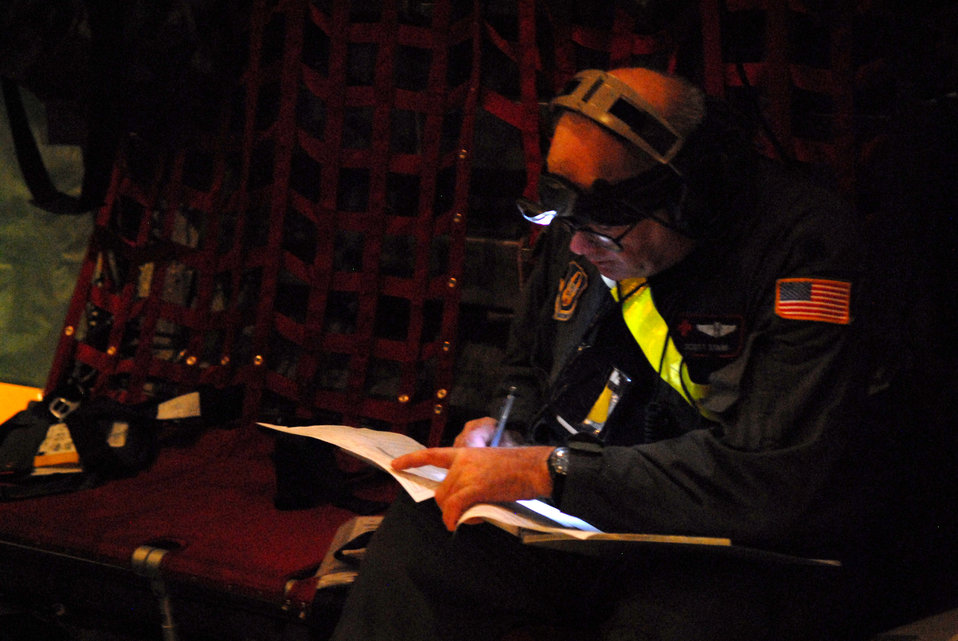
Airman evacuate patients from Beaumont

Lt. Col. Jeffrey Starr goes through pre-flight procedures Sept. 12 before taking off from Little Rock Air Force Base, Ark., for Beaumont, Texas. Medical patients were being transported from Beaumont to Lackland AFB in San Antonio in C-130 Hercules aircraft by aircrews from Little Rock AFB and medical Airmen from the 908th Aeromedical Evacuation Squadron at Scott AFB, Ill., in preparation for Hurricane Ike's landfall in southern Texas.